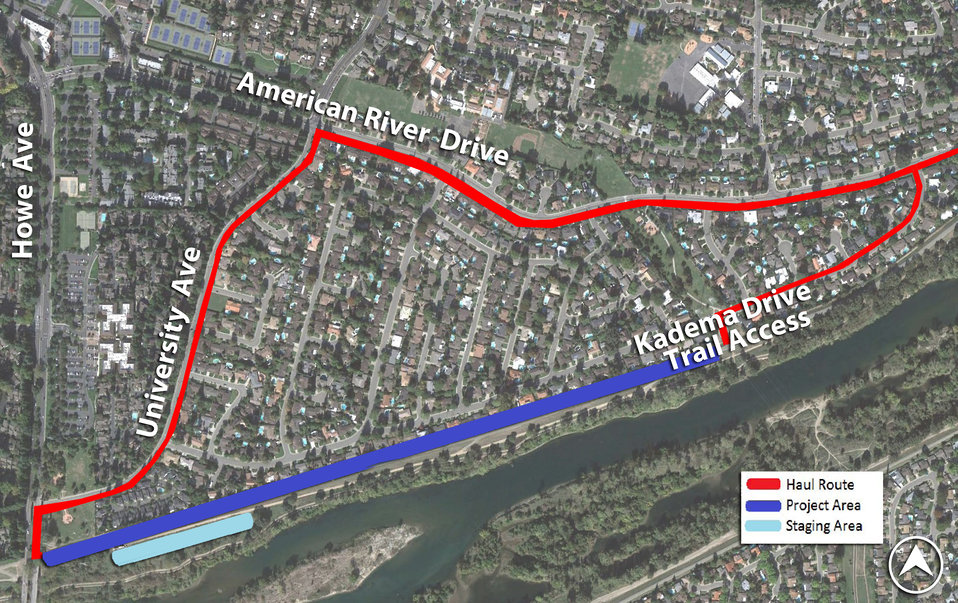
Map of the Howe Avenue levee raise project

A map of the Howe Avenue levee raise project illustrates the project area and haul routes for the levee construction—scheduled from July 25 to Oct. 25, 2012—along the American River in Sacramento, Calif. The map was included on informational fliers handed to residents and published on the district’s website in early July. The project is part of the American River Common Features project, a joint flood risk reduction effort between the Corps, the state’s Central Valley Flood Protection Board/Department of Water Resources and the Sacramento Area Flood Control Agency.